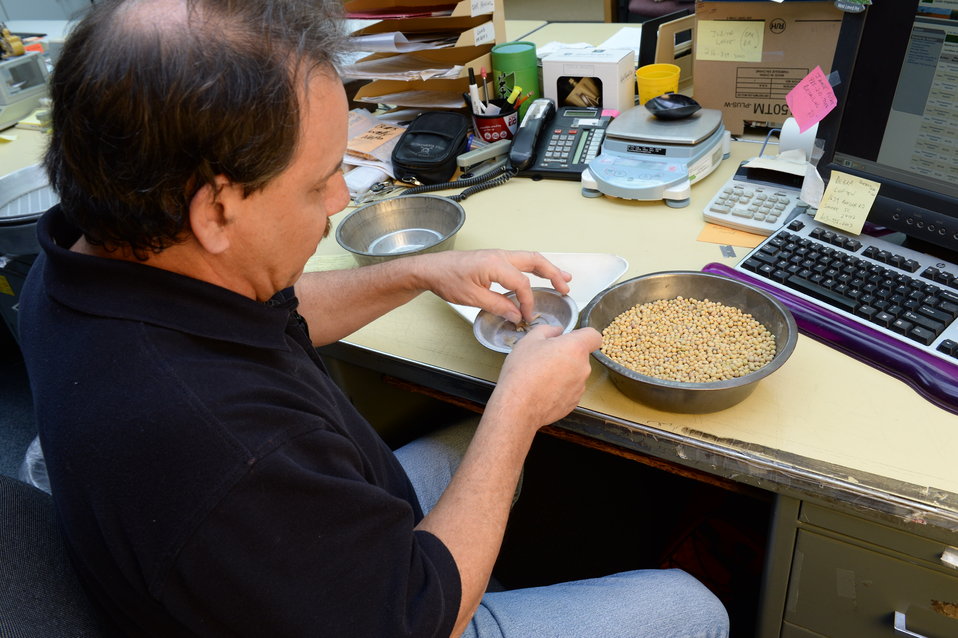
U.S. Department of Agriculture (USDA) Grain Inspection, Packers and Stockyards Administration (GIPSA) Federal Grain Inspection Service (FGIS) employee examines grain samples at the FGIS inspection laboratory in New Orleans, LA on Monday, Nov. 18, 2013.